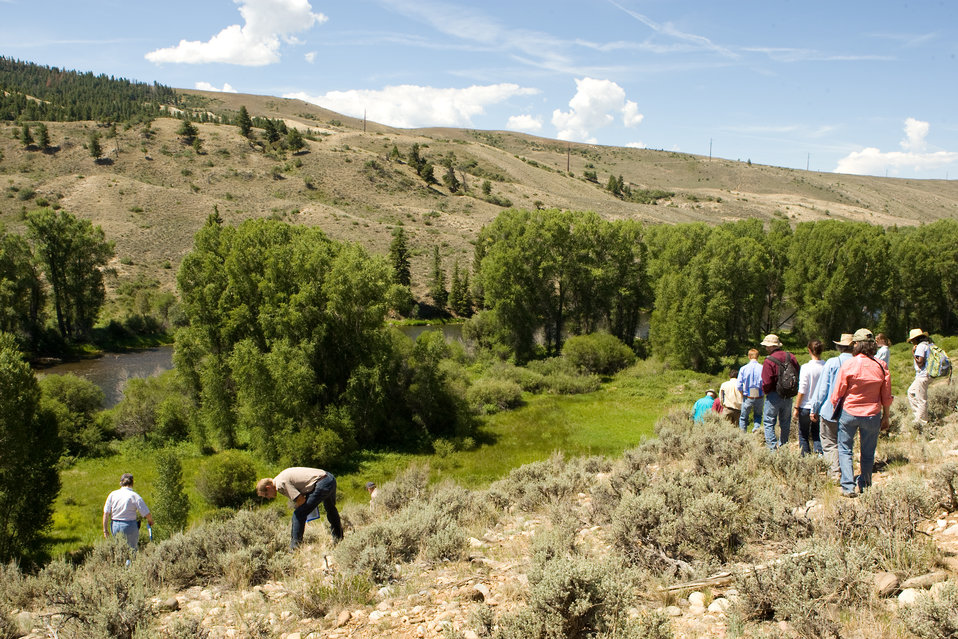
Colorado Rare Plant Conservation Initiative

The Colorado Rare Plant Conservation Initiative (RPCI) is a partnership of 23 statewide and regional agencies, private organizations, and academic institutions working to conserve 121 rare plants in Colorado. As part of these efforts the group developed the Colorado Rare Plant Conservation Strategy, developed Best Management Practices to reduce energy development impacts, addressed climate change, and developed focused strategies for the conservation of individual species at eight priority landscapes. The group has also worked to coordinate volunteer efforts for plant conservation across the state.